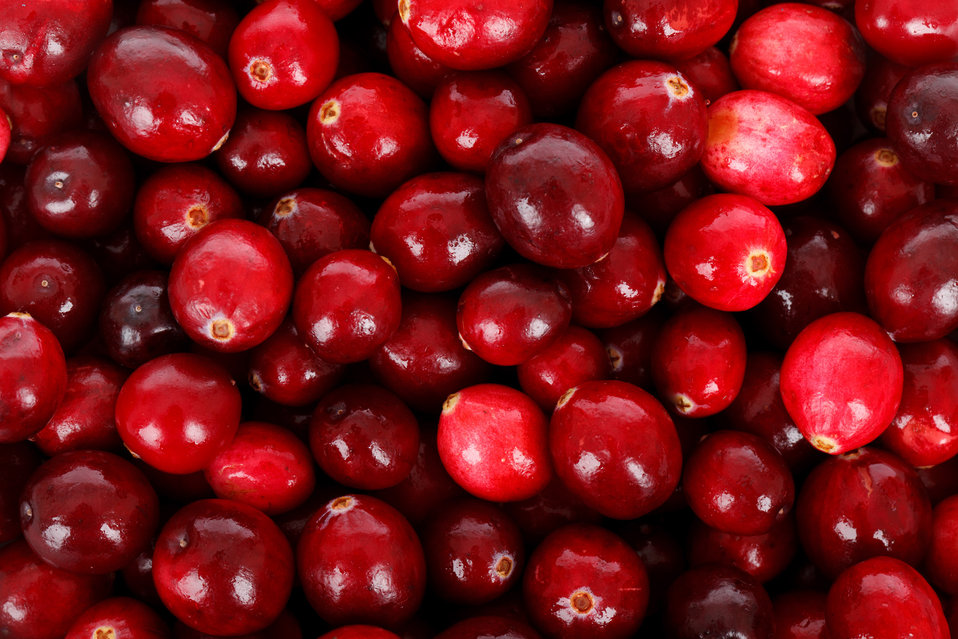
Cranberries background

Fresh ripe cranberries background image.